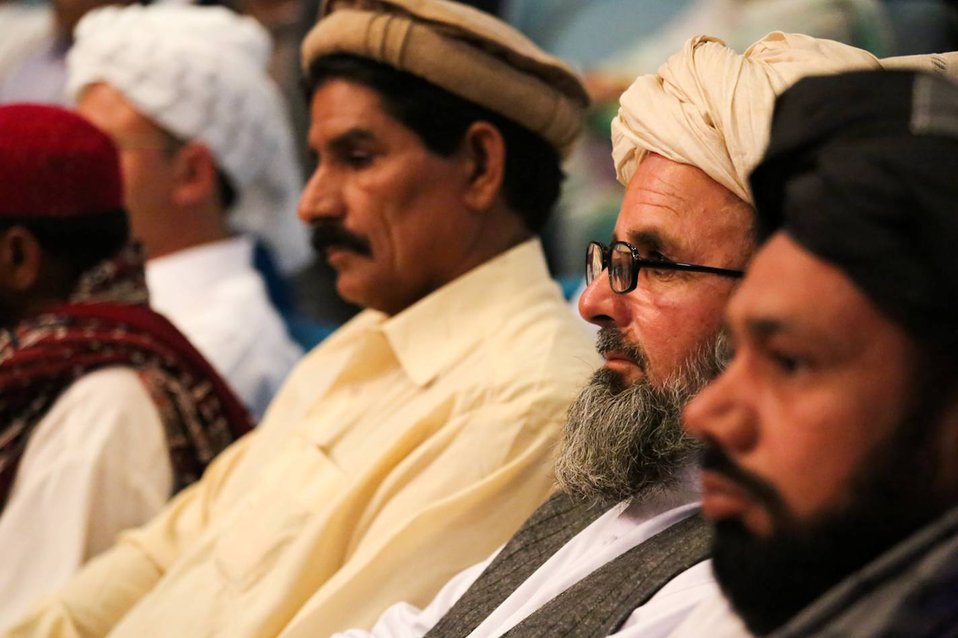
Islamabad, September 12, 2012 - Project Launch Ceremony of Waran Canal Irrigation System